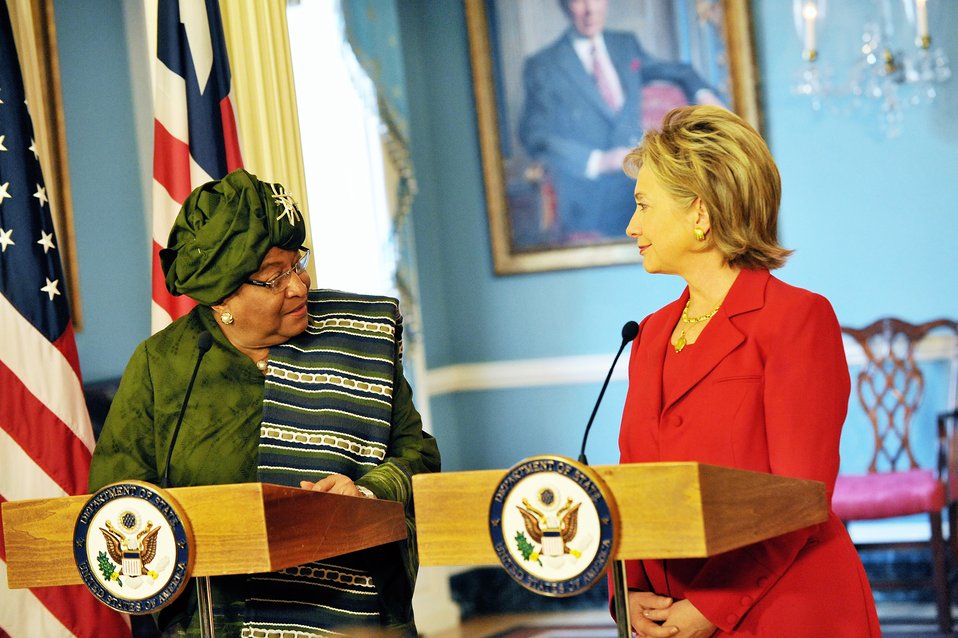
Secretary Clinton Meets With Liberian President

U.S. Secretary of State Hillary Rodham Clinton meets with Liberian President Ellen Johnson-Sirleaf at the U.S. Department of State in Washington, DC April 21, 2009.